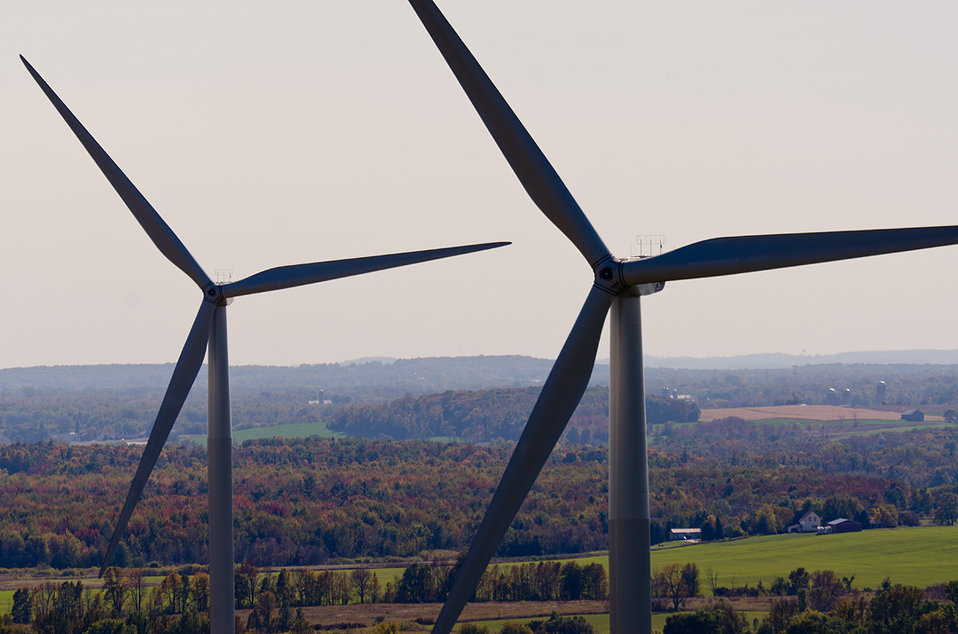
Shirley Wind Farm - Green Bay, Wisconsin.